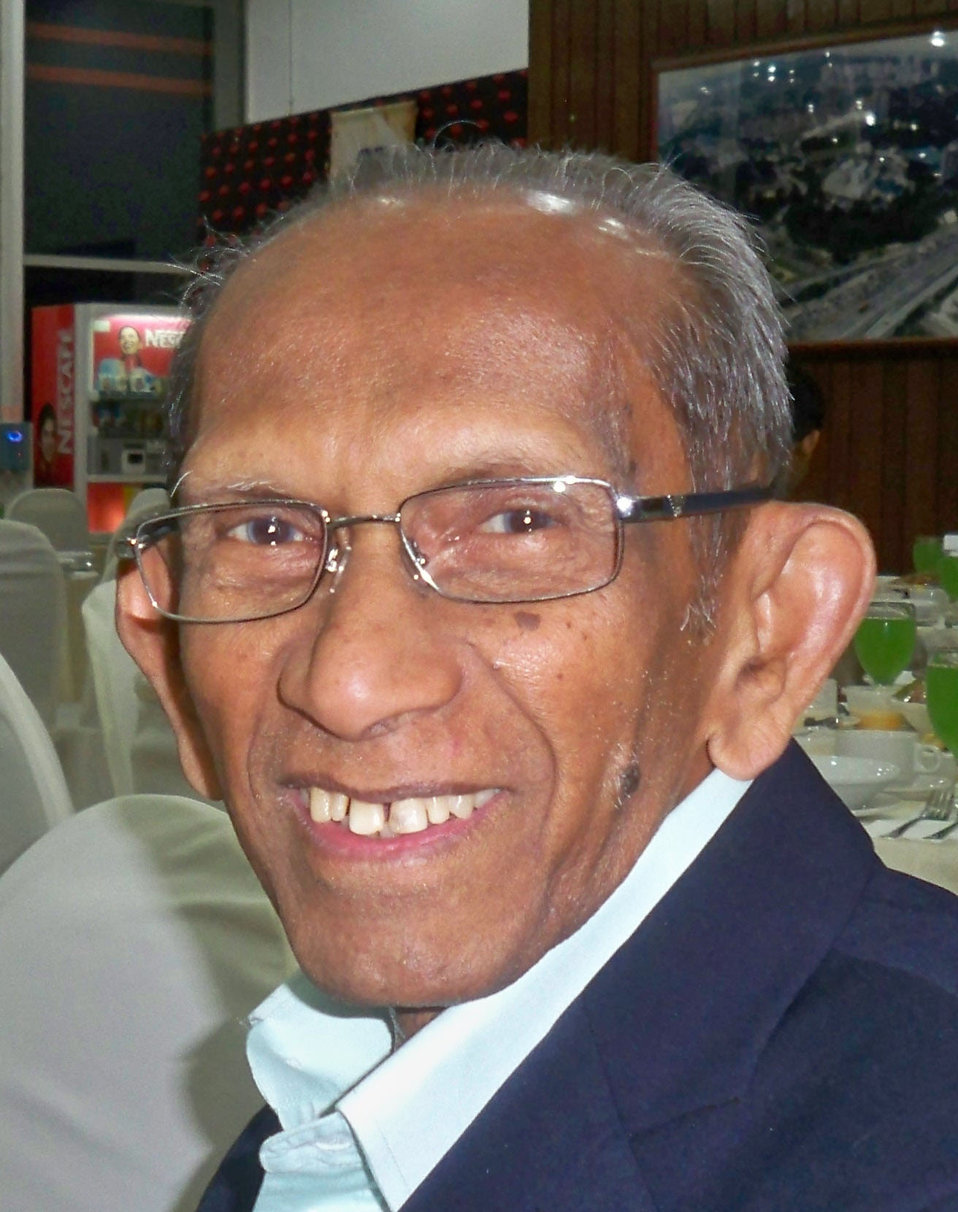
Bahasa Melayu: Mohd Nor bin Mohd Yusofe. Foto Yusnor Ef tokoh seni terkemuka Singapura dan Malaysia